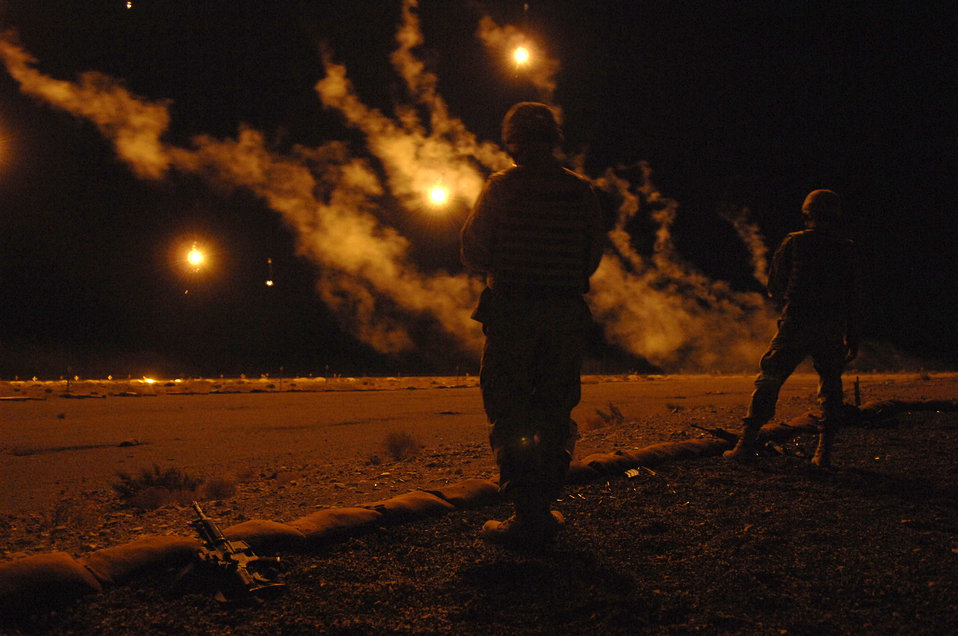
Lighting the night

Trainees set off flares during night training on the firing range Aug. 11 near Creech Air Force Base, Nev. Members of the 99th Ground Combat Training Squadron train security forces members and chaplains who will be embedded with the Army at Joint Base Balad, Iraq.